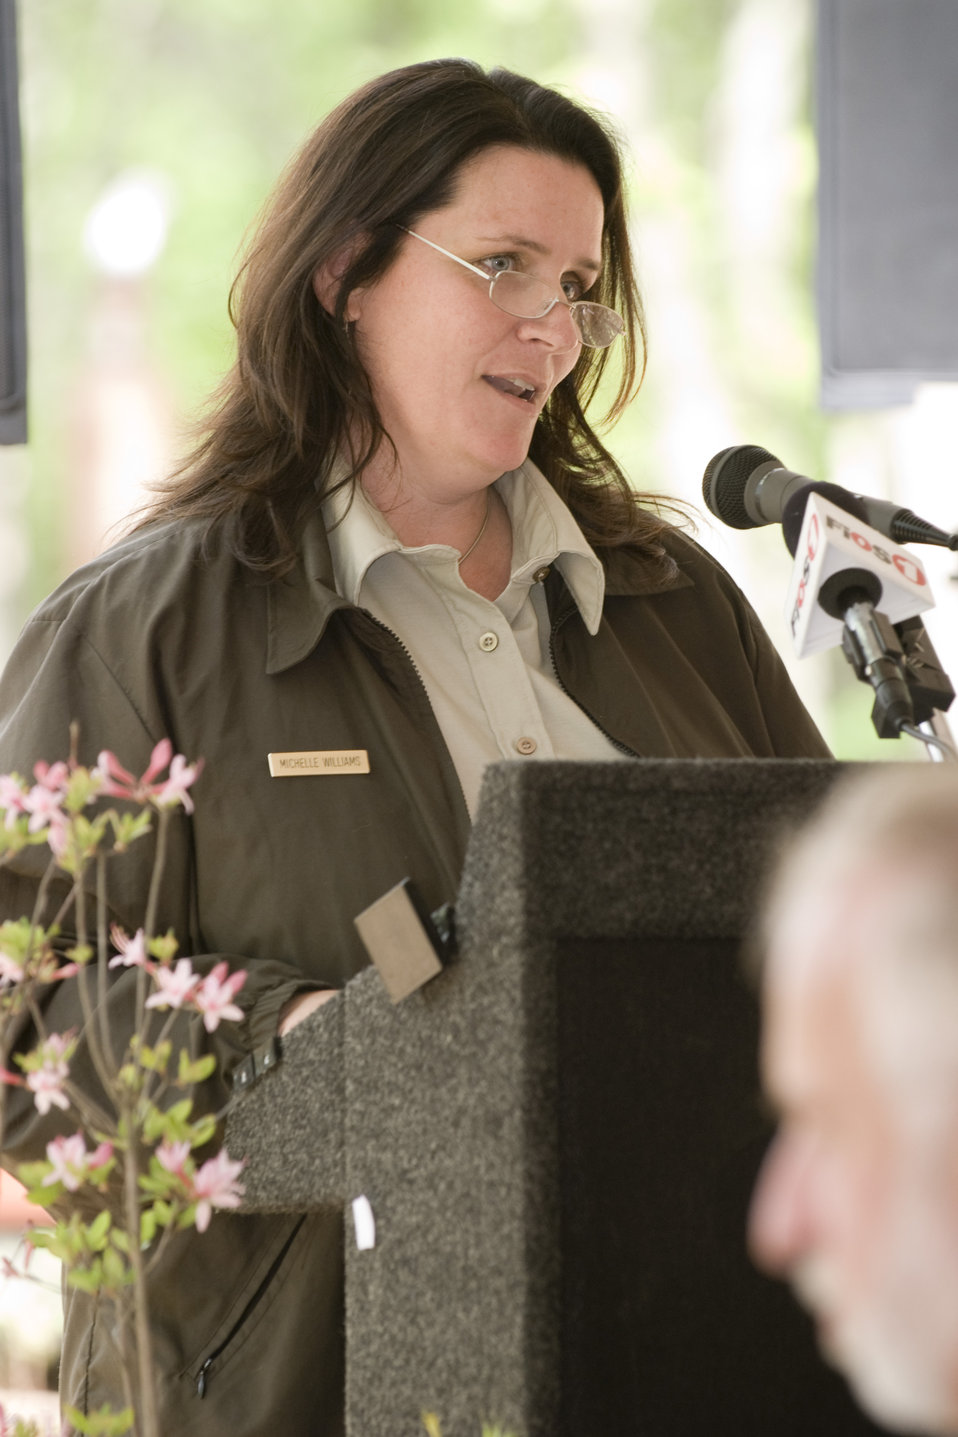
Refuge Manager Michelle Williams